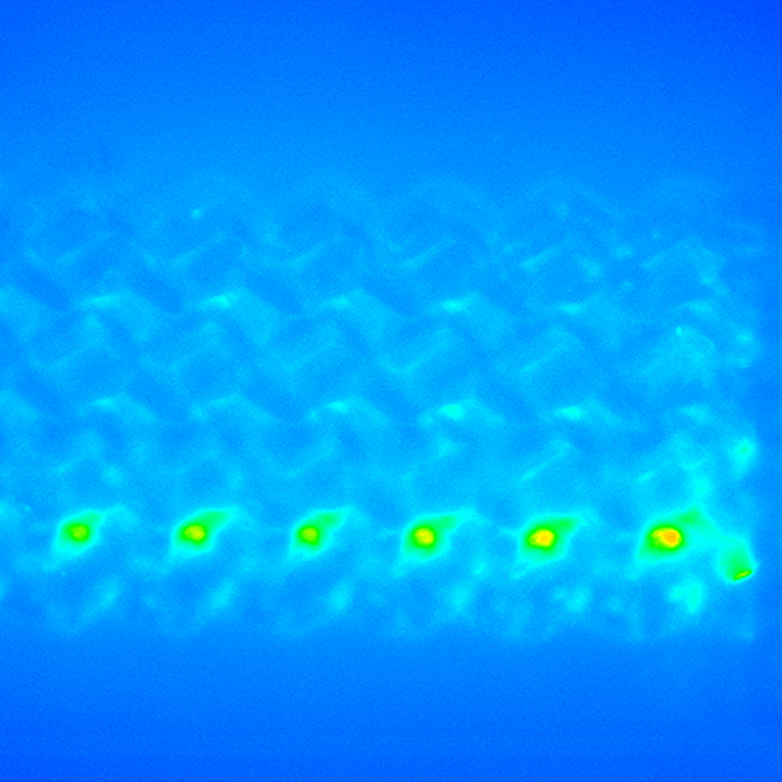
Bacterial Cells

The stained bacterial cells shown in this image are part of a prototype 'lab on a chip' sensor system designed by NIST scientists and collaborators. The cells adhere to posts constructed within microscopic channels of a plastic sensor device. The blue, green, yellow, and orange colors reflect increasing densities of e.coli cells, which eject potassium in the presence of certain chemicals.